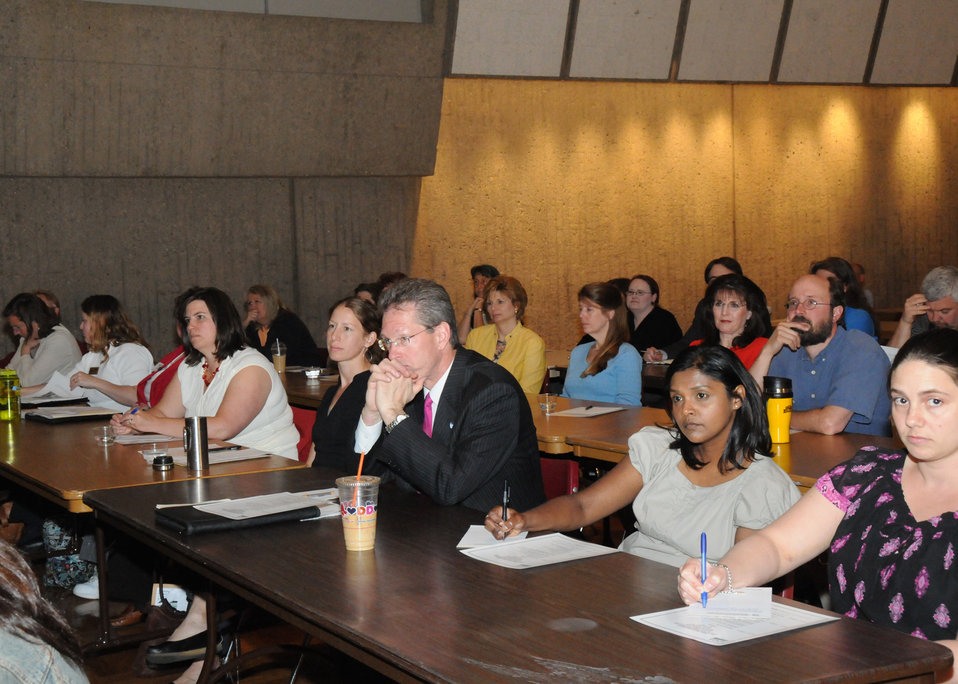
Agriculture employees attend the last in a series of six employee listening sessions on the Cultural Transformation of the United States Department of Agriculture (USDA) was held on the campus of the University of Massachusetts in Amherst, MA, on Wednesday, May 5, 2010. USDA photo 10di1342-22.